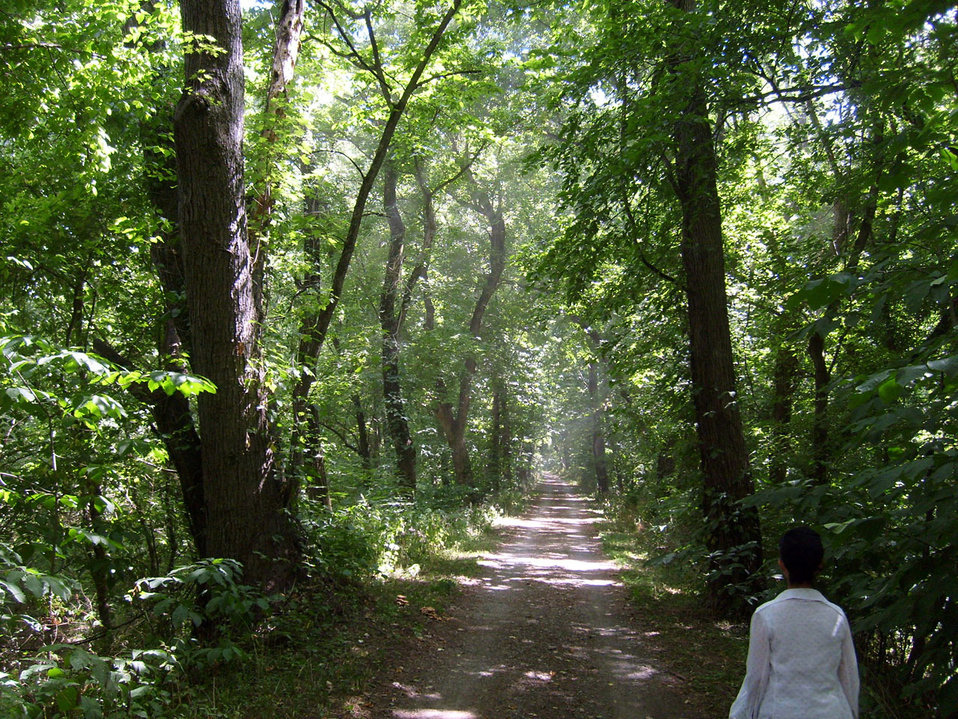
Tow path c&o canal.